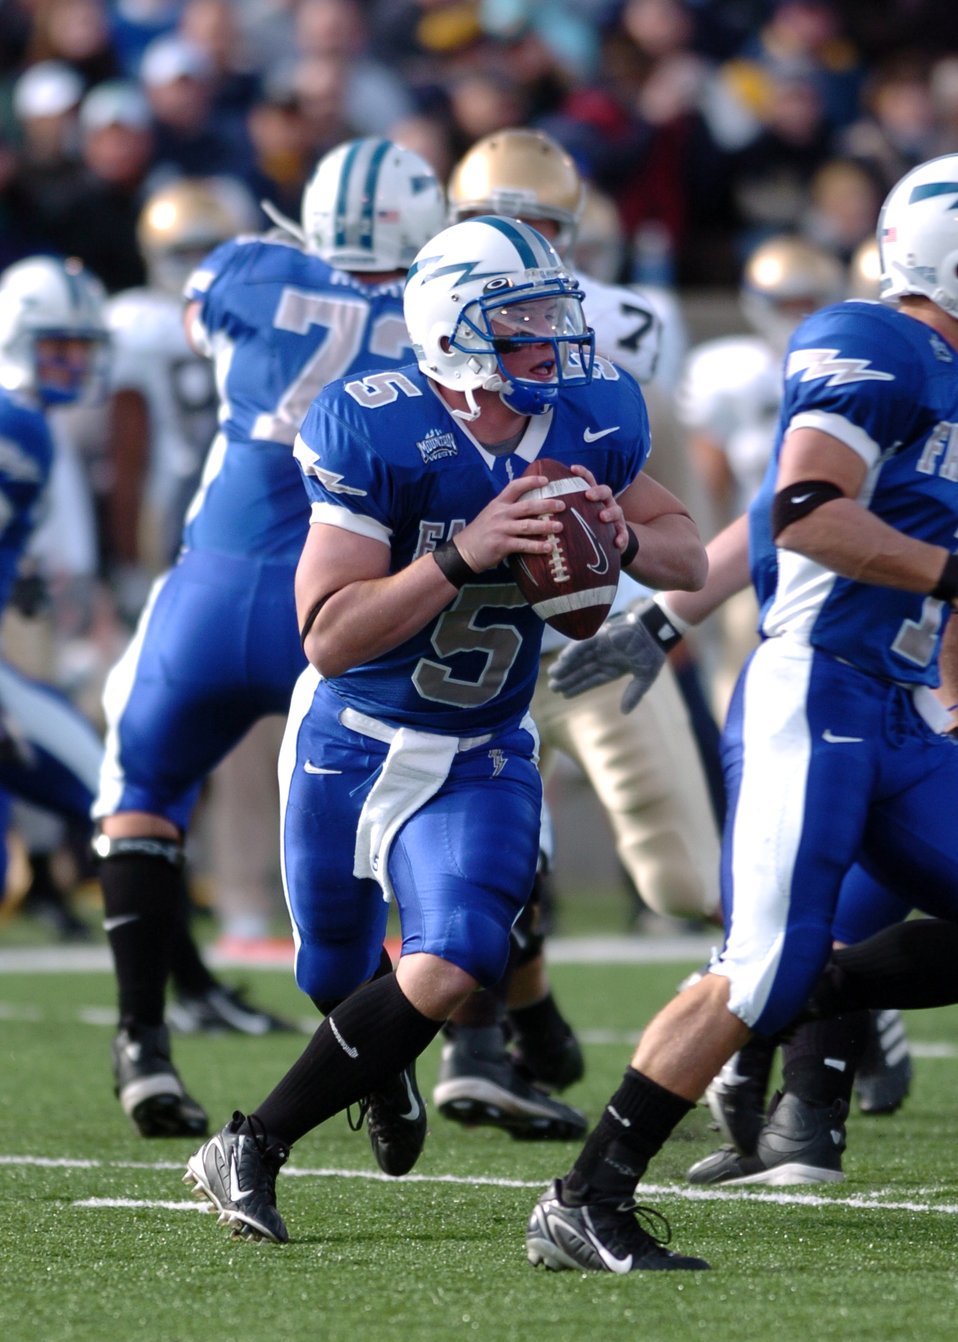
Targets Downfield

Air Force quarterback Shaun Carney looks for targets downfield against 8th-ranked Notre Dame Saturday. Carney threw for 205 yards and two touchdowns on the day, but was outmatched by Irish quarterback Brady Quinn?s four touchdowns. The Irish cruised to victory, 39-17.